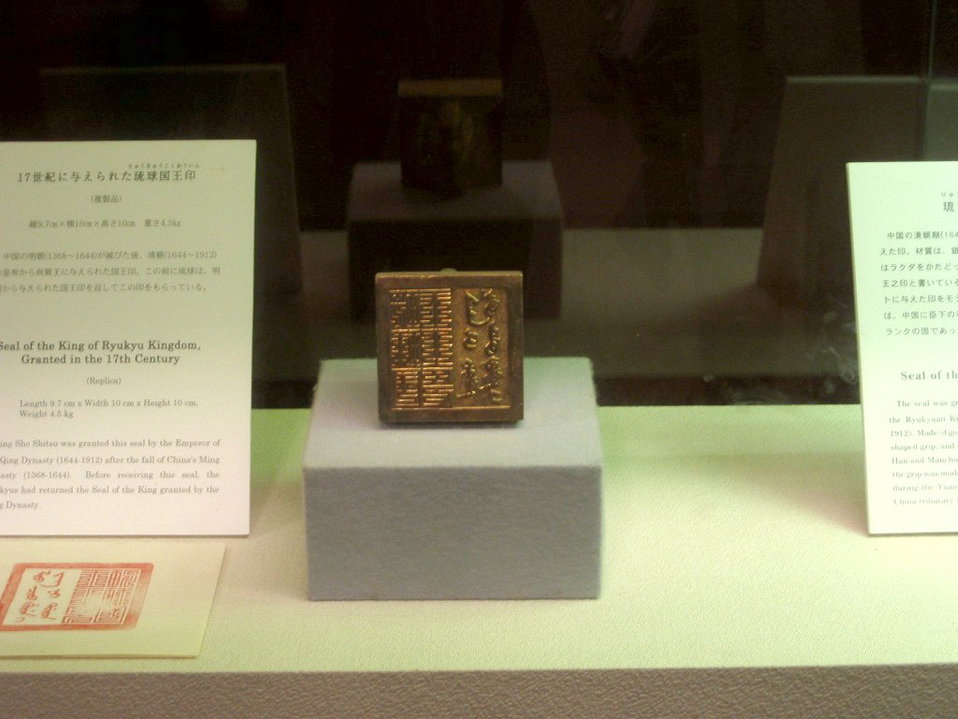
Ink stamp of Ryukyu king
琉球國王印